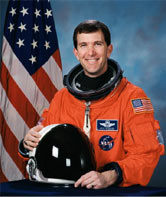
Col. Richard D. Husband

1990s -- Col. Richard D. Husband